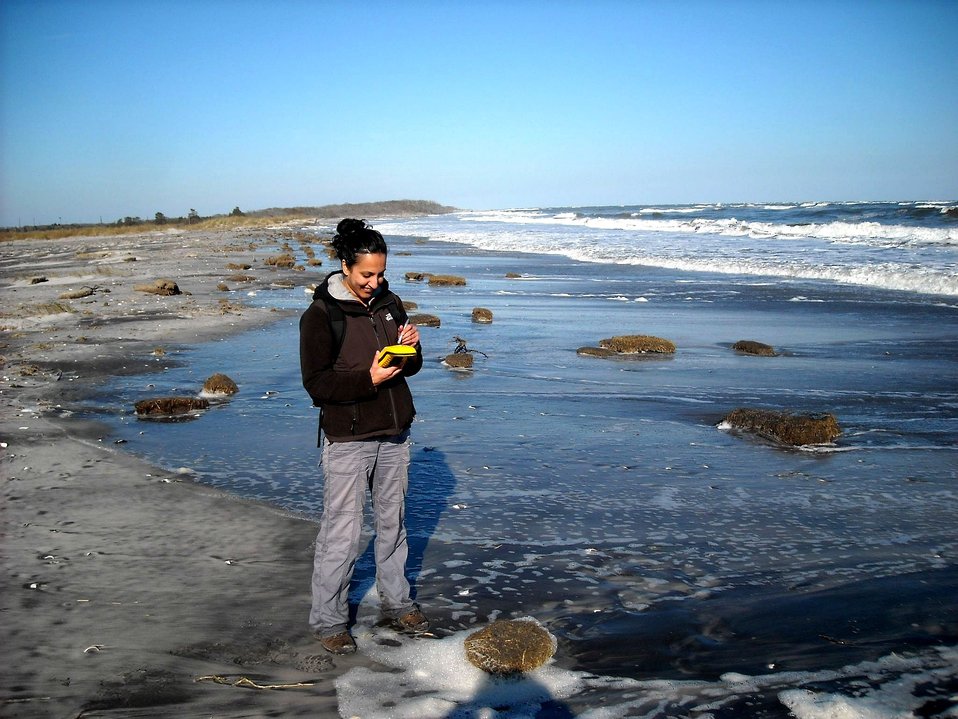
EB Forsythe Refuge

USFWS Wilderness Fellow Monica Patel conducts a shoreline survey at Little Beach in the E.B. Forsythe National Wildlife Refuge wilderness, NJ in 2011.